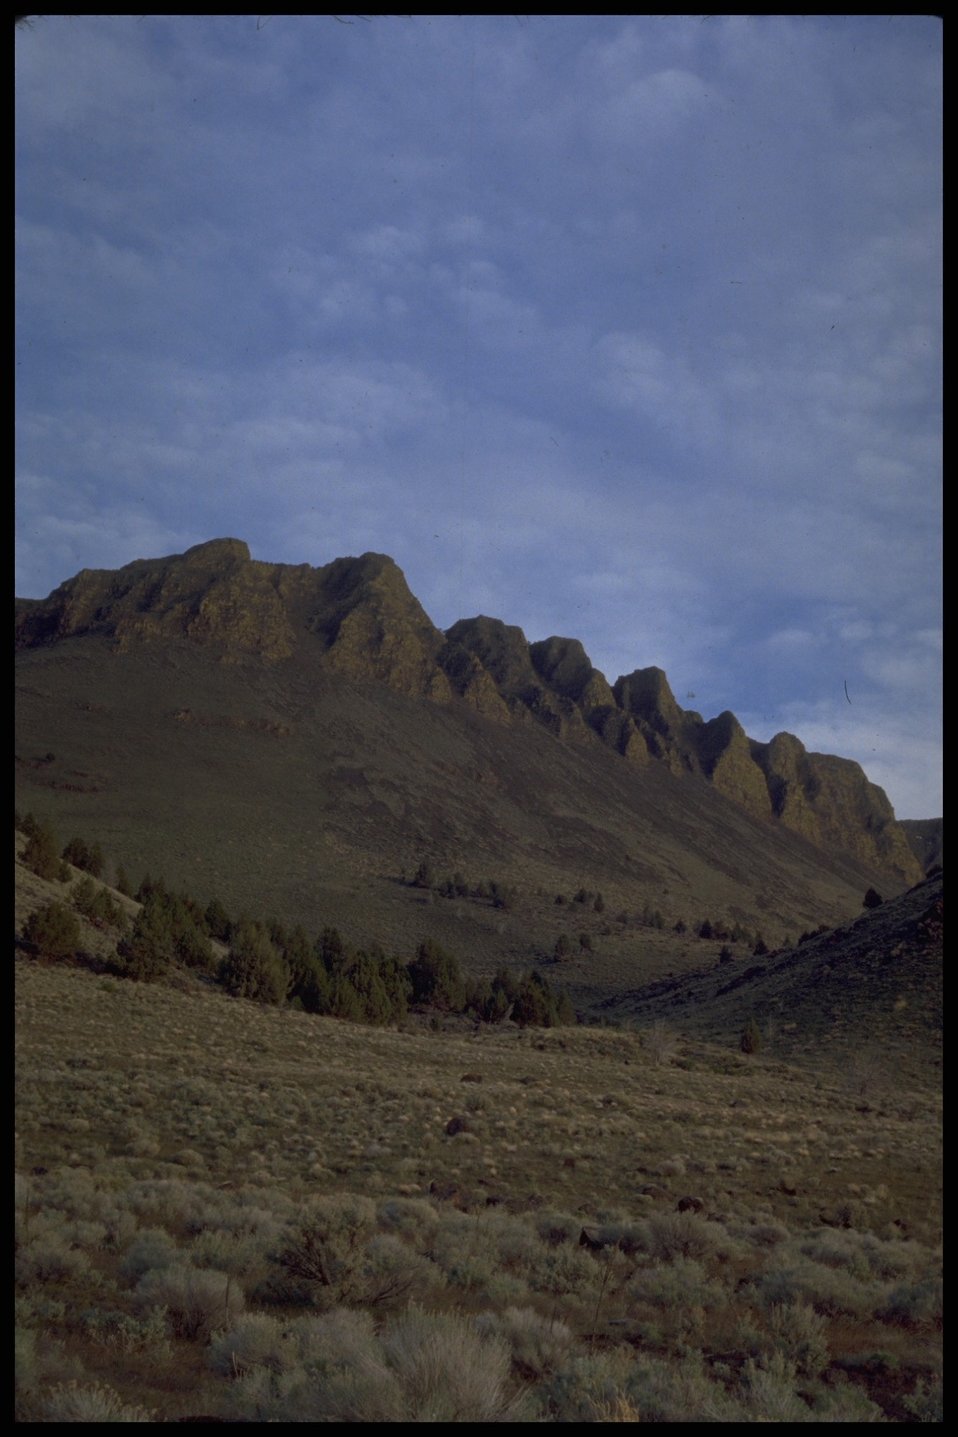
Scenic view of Abert Rim, Lakeview District.